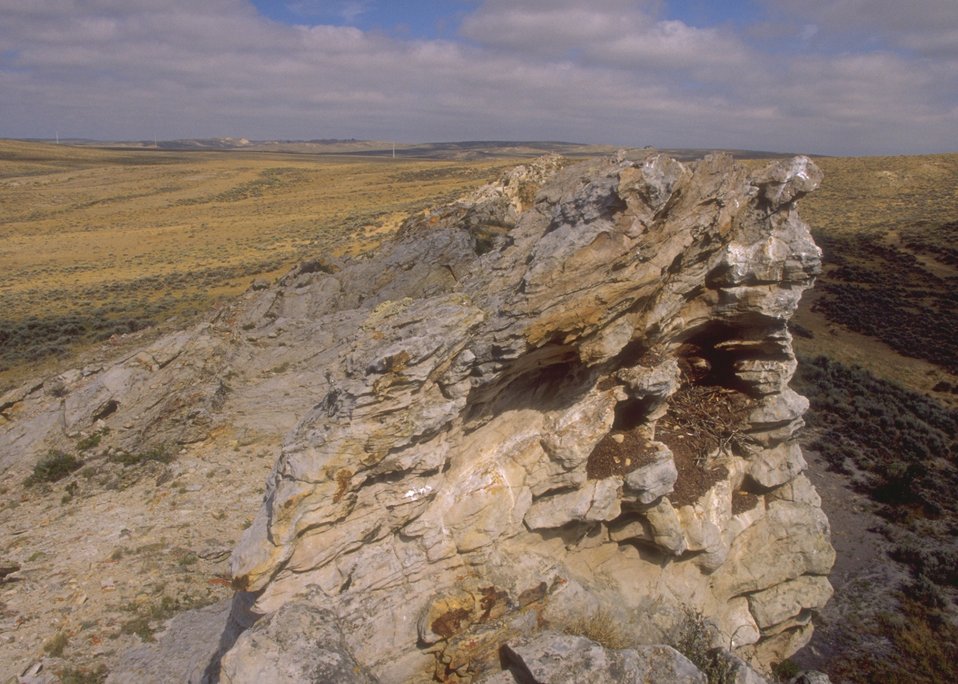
Rock Avenue area along the Oregon Trail, Casper Field Office.